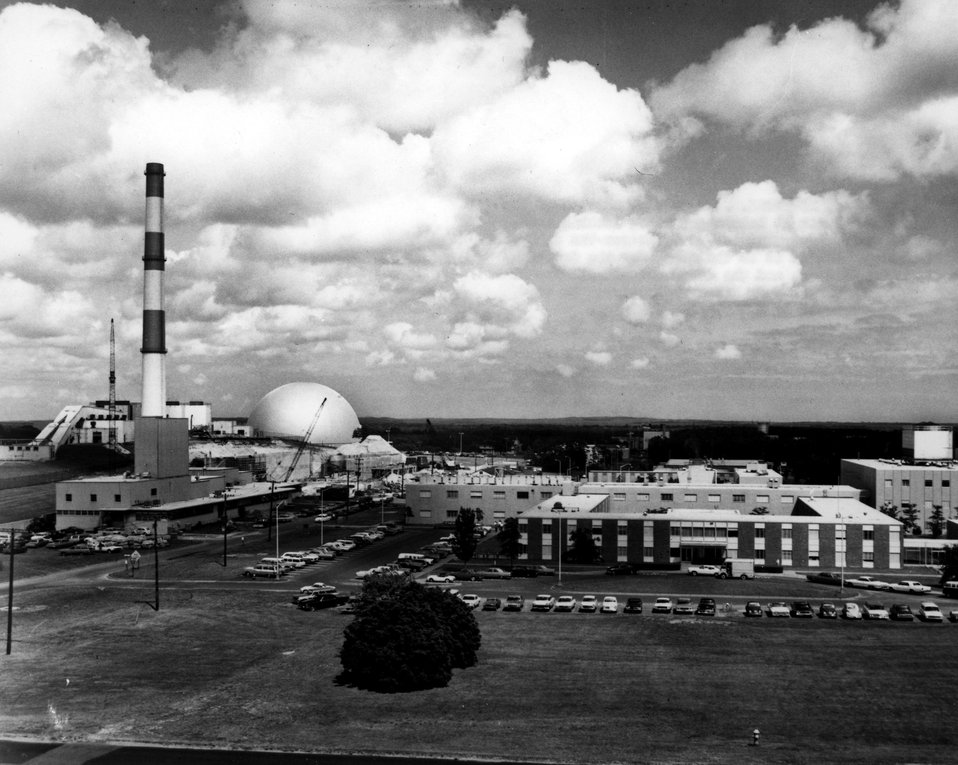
View of a portion of the Brookhaven National Laboratory site, looking east.